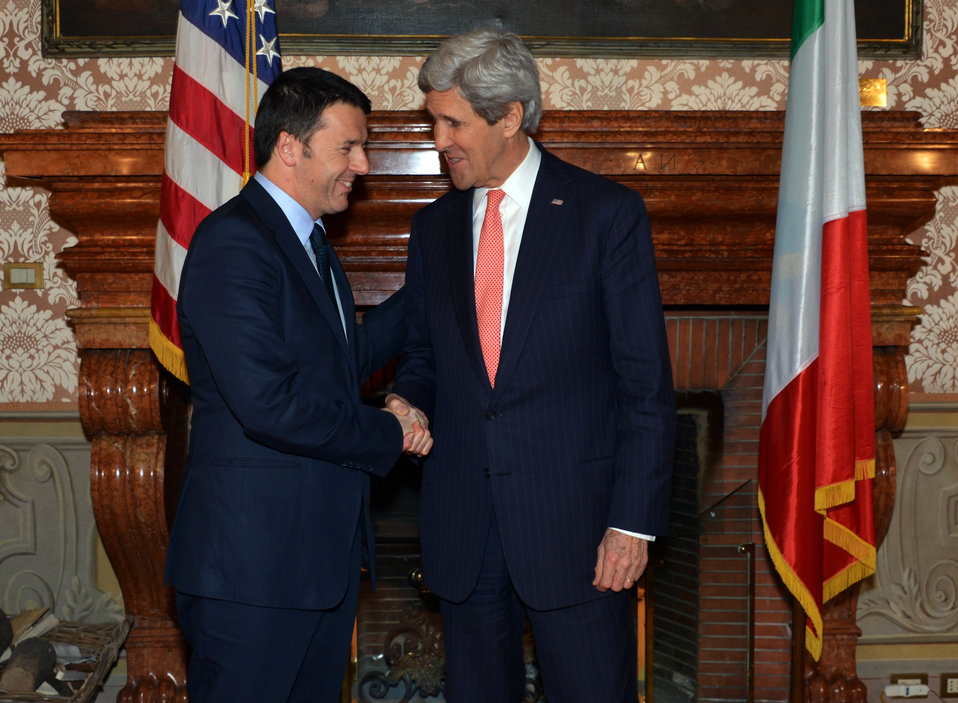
Secretary Kerry Meets With Italian Prime Minister Renzi

U.S. Secretary of State John Kerry meets with Italian Prime Minister Matteo Renzi in Rome, Italy, on March 6, 2014.